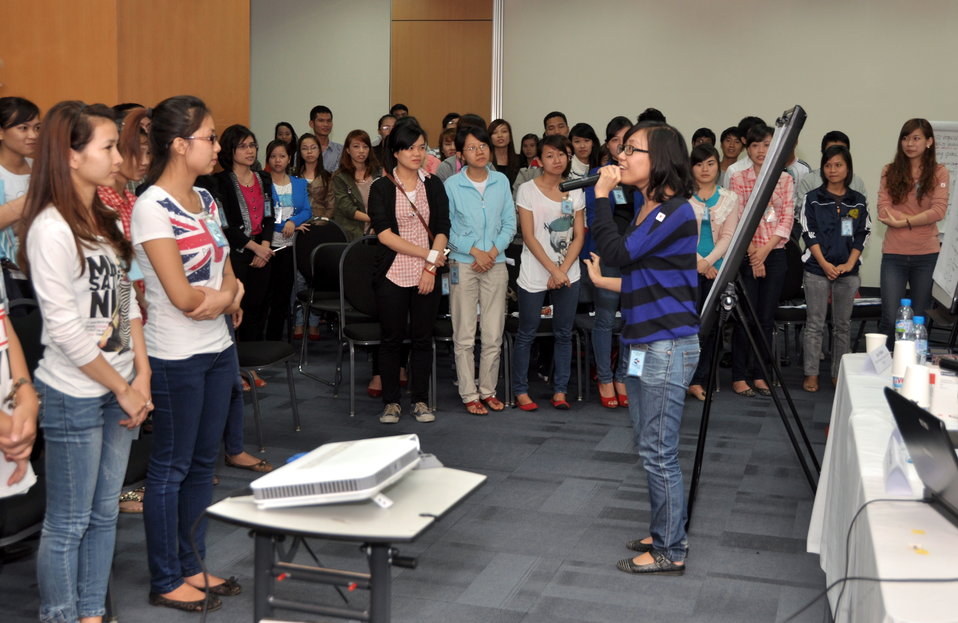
Students join the ‘USAID and Higher Education in Vietnam’ talk

Photo: @USAIDVietnam, November 19, 2012